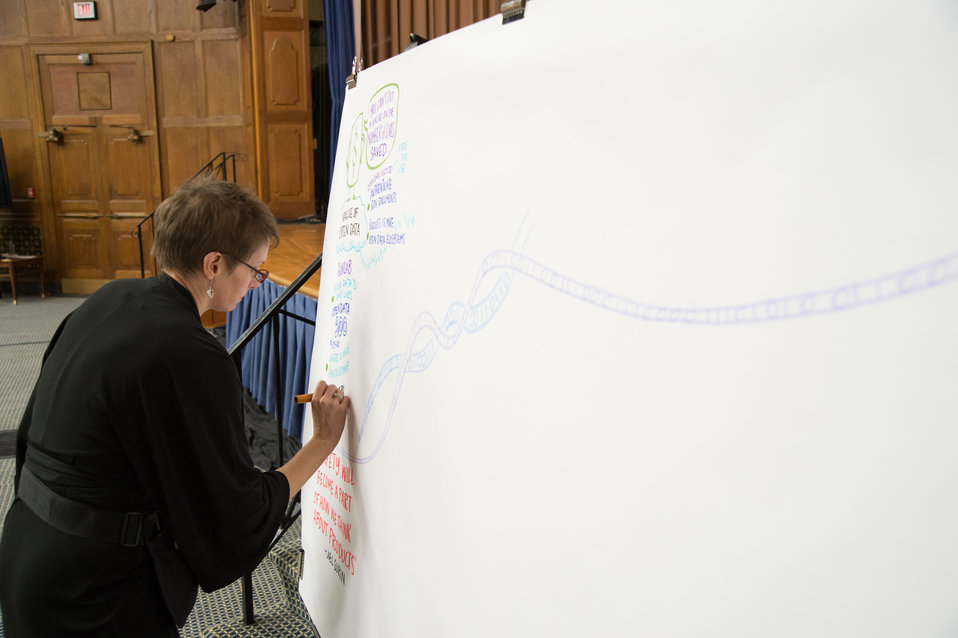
he White House Office of Science and Technology Policy, the White House Office of Public Engagement, the U.S. Department of Transportation, and the U.S. Department of Agriculture (USDA) host the second annual “Safety Datapalooza,” in the Jefferson Auditorium at USDA in Washington, D.C. on Tuesday, Jan. 14, 2014. The “Safety Datapalooza,” highlights innovators from the private, nonprofit, and academic sectors who have used freely available government data to build products, services, and apps that advance public safety in creative and powerful ways. This year’s meeting features new safety data resources in the areas of transportation, food, occupational and consumer product safety tools to improve disaster preparedness and emergency response. A series of panel discussions and brainstorming sessions are being held in which attendees will have the opportunity to discuss how technology and open data are being used to address public safety challenges across America.